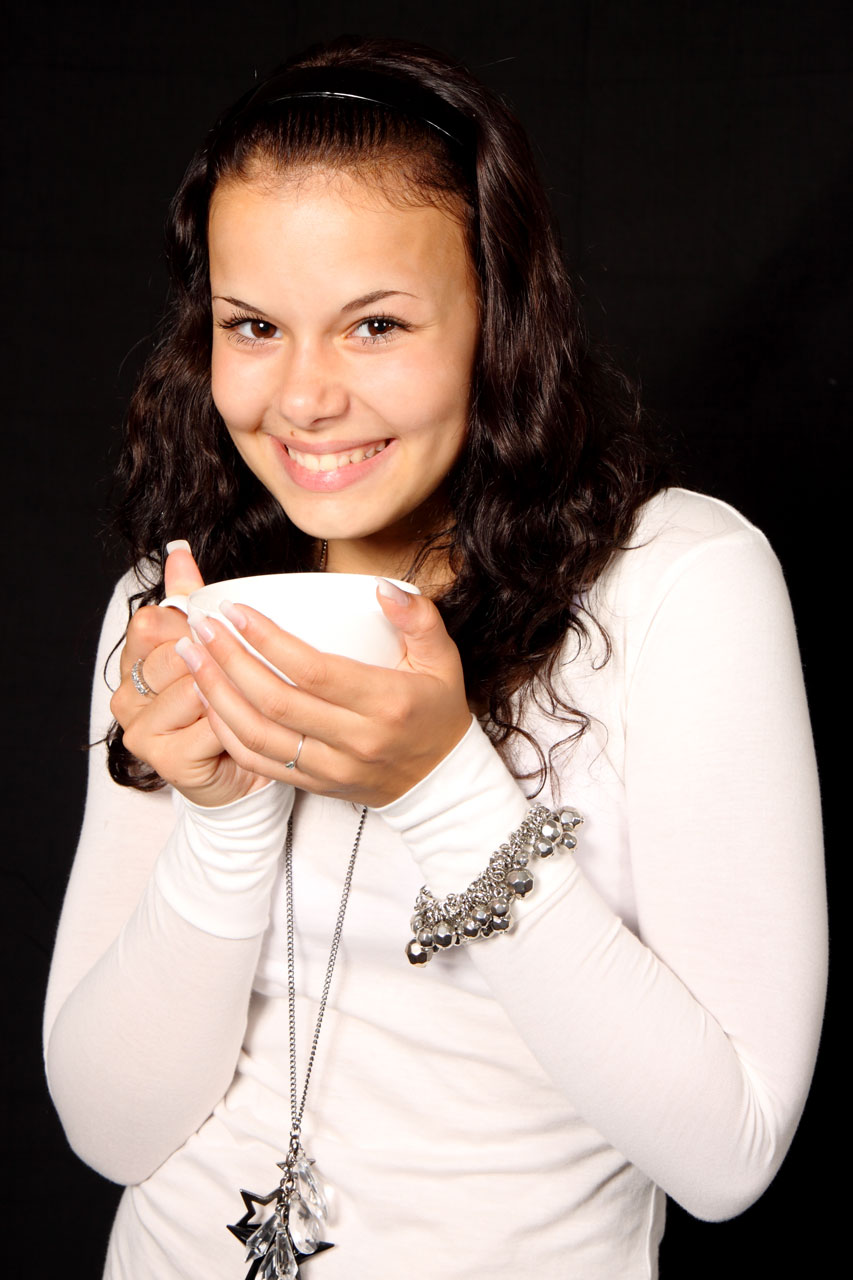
Woman holding cup

Young woman smiling and holding a cup.